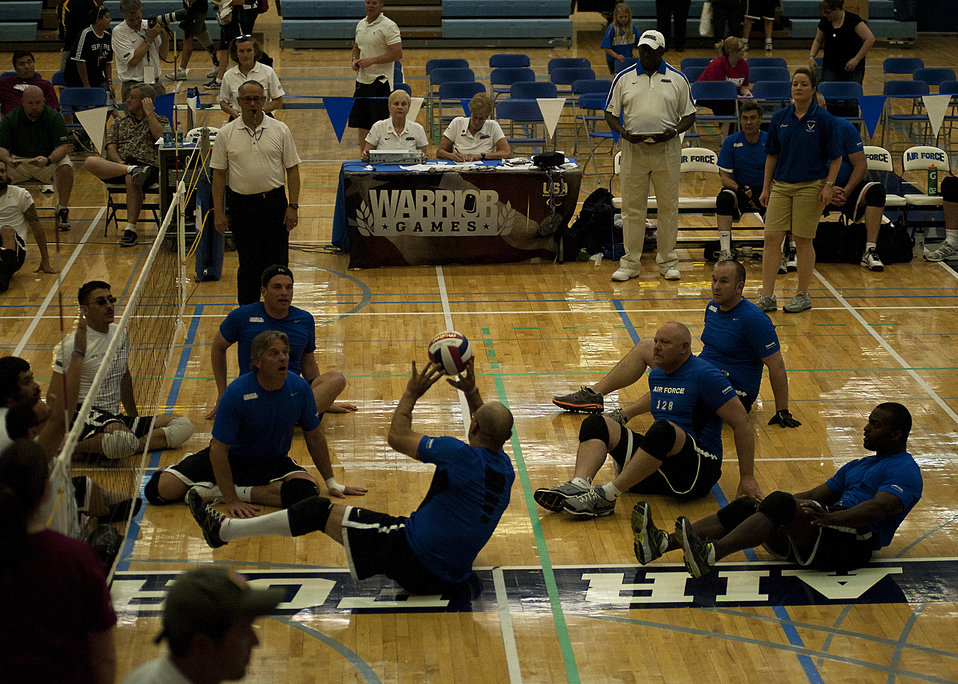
Warrior Games

Master Sgt. Christopher Aguilera, with the Air Force team, sets the ball during his team's sitting volleyball bronze medal game against the Special Operations Command team during the 2012 Warrior Games at the U.S. Air Force Academy in Colorado Springs, Colo., May 3, 2012. Air Force won by a score of 25-12 and 25-20.